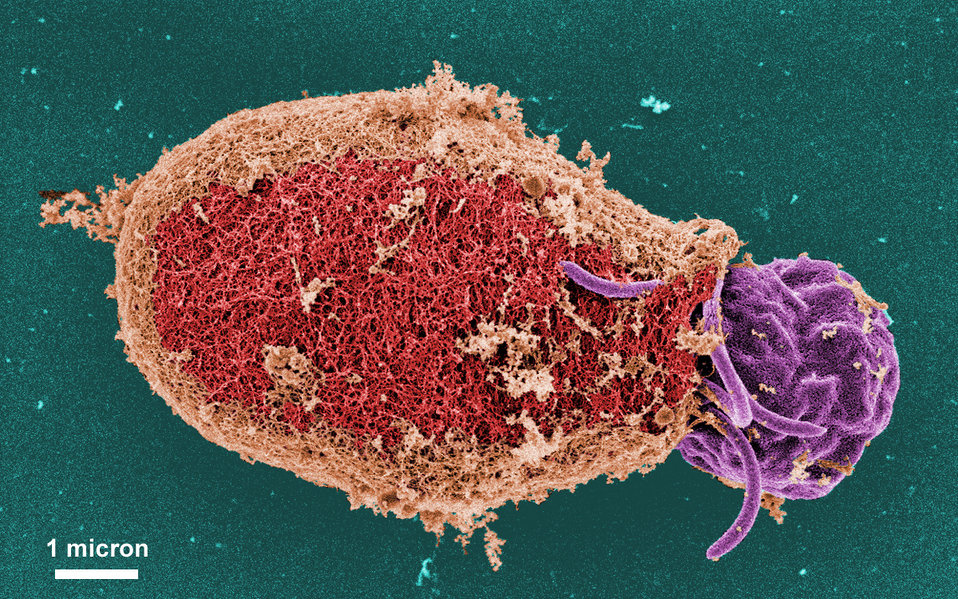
This digitally-colorized scanning electron micrograph (SEM) depicted some of the ultrastructural morphologic details of an oblong-shaped Giardia sp. protozoan cyst, revealing the filamentous nature of the cyst wall. Each cyst-wall filament is approximately 7 to 20 nanometers (nm) thick. Note that this cyst was undergoing "excystation", and was captured at a point in the process where a flagellated trophozoite was beginning to emerge from the right side of the cyst.